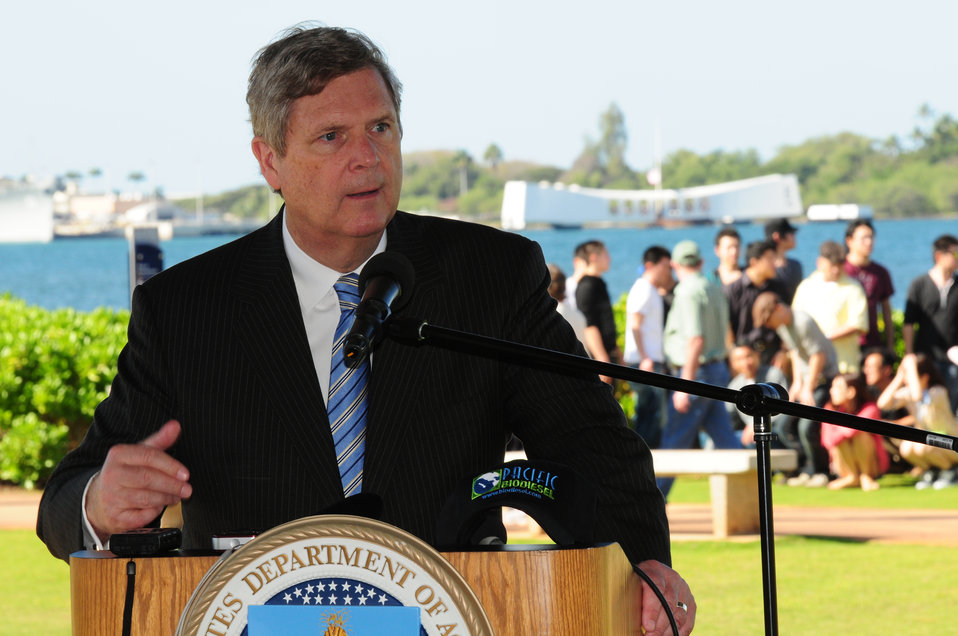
Agriculture Secretary Tom Vilsack highlights the Obama Administration's commitment to renewable energy at the.World War II Valor in the Pacific National Monument's Pearl Harbor Visitor Center. Pearl Harbor naval base was the first Hawaii military marine fleet to use biodiesel, replacing the Department of Navy-operated tour boats that shuttled visitors to and from the USS Arizona Memorial with five new boats capable of running on 100% biodiesel. Near Honolulu, HI, on Tuesday, January 10, 2012.